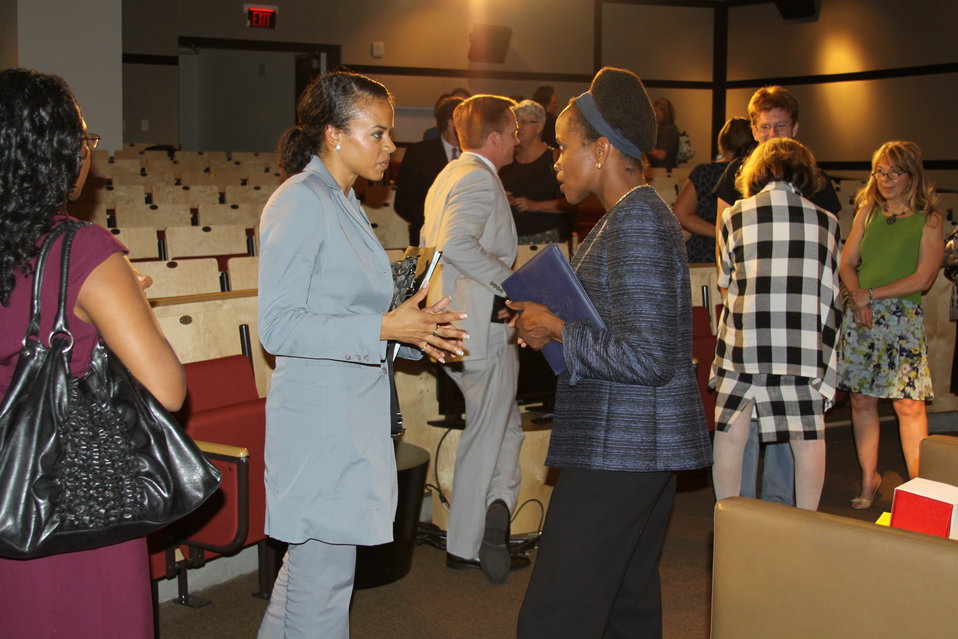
Assistant Secretary Brimmer Speaks With an Audience Member

Assistant Secretary for International Organization Affairs Esther Brimmer speaks with an audience member following the panel event, “Shattering the Glass Ceiling: Empowering Women in Leadership, Diplomacy, and Government,” at the University of Nevada in Las Vegas on September 1, 2011.